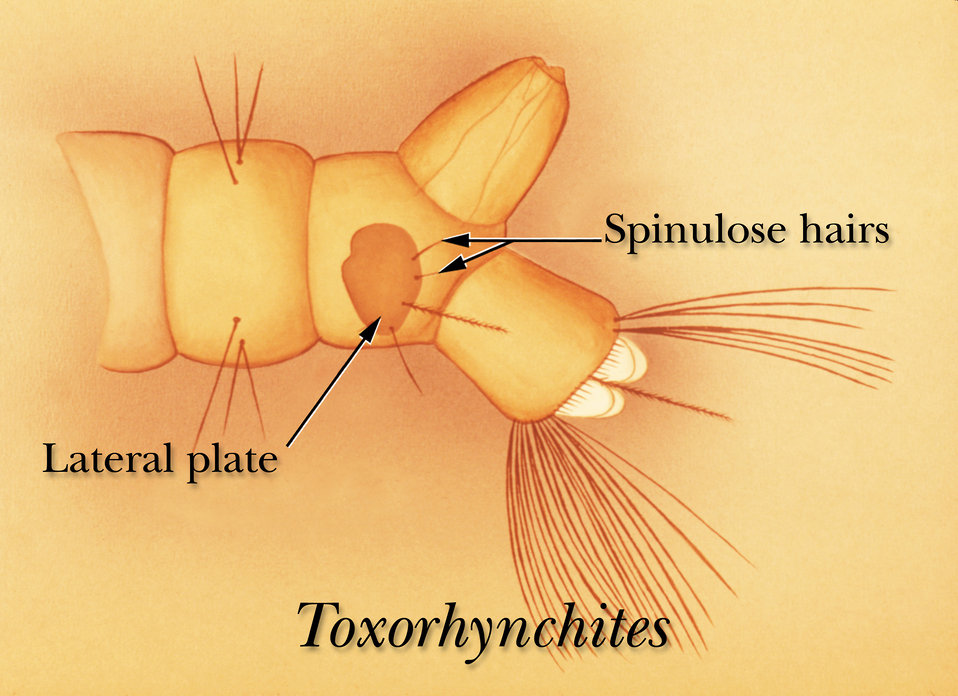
The sclerotized plate and spinulose hairs on the terminal abdominal segment of a Toxorhynchites mosquito.